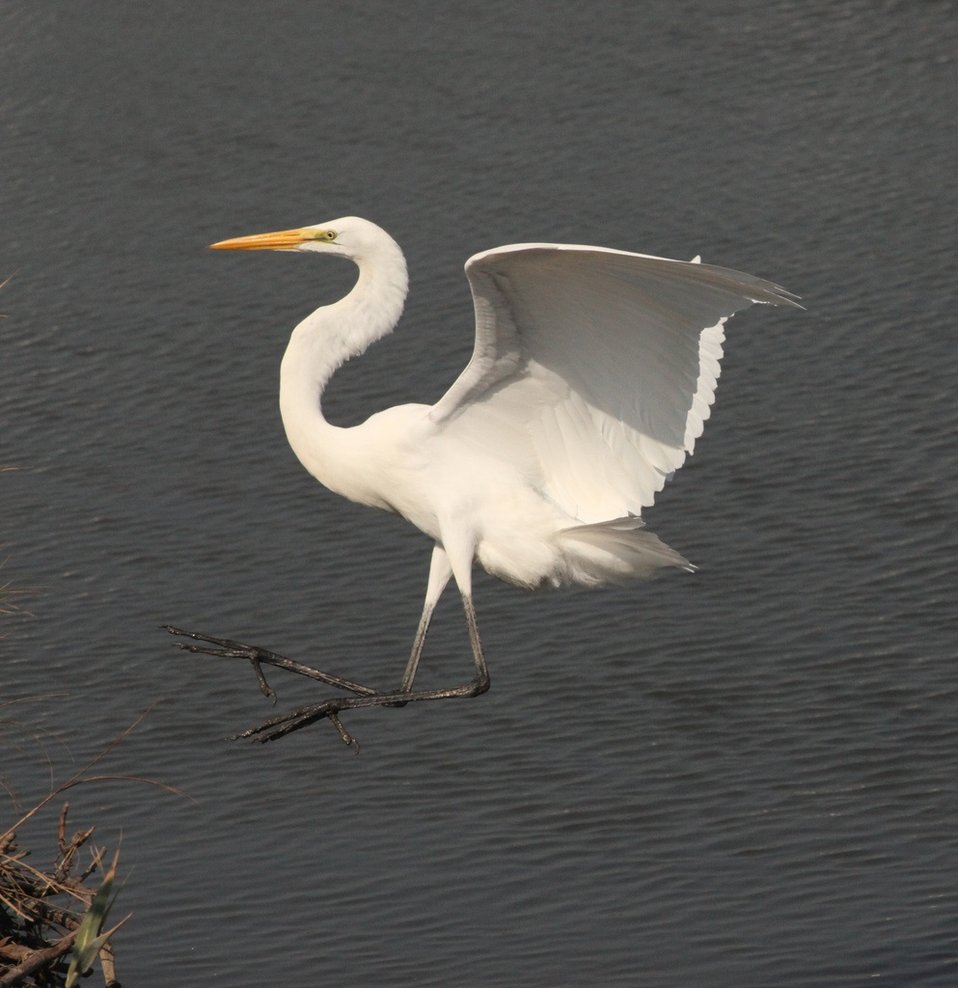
Photo of the Week: Great Egret at Forsythe National Wildlife Refuge

From the USFWS Northeast Flickr account. The Photo of the Week for 09/09/10

A great egret landing at Edwin B. Forsythe National Wildlife Refuge in New Jersey.